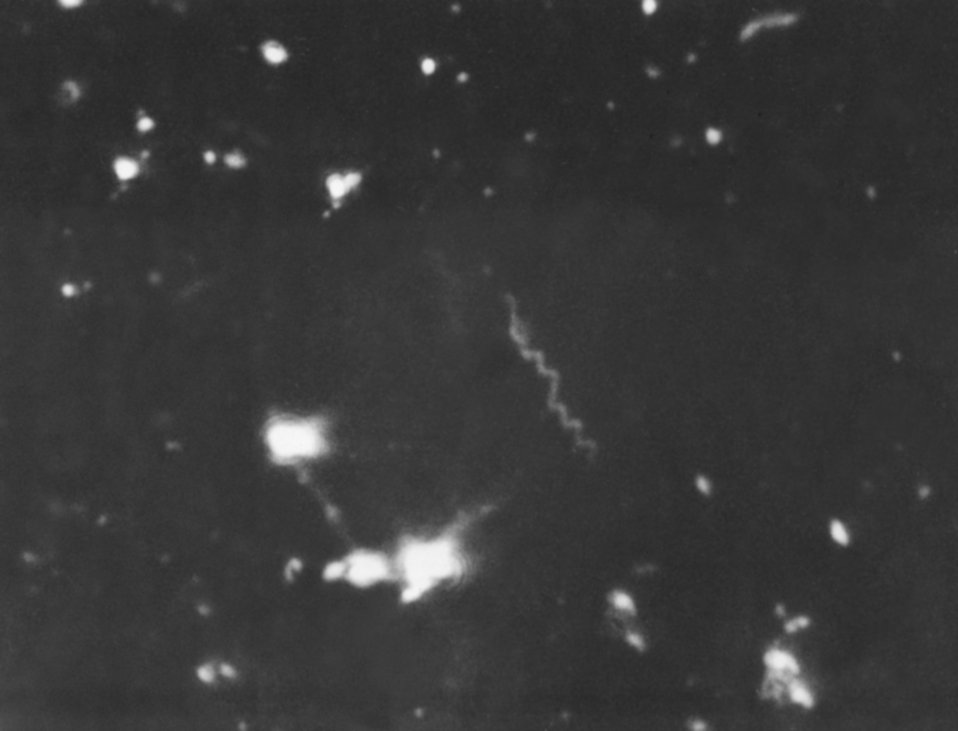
A dark field photomicrograph of a Treponema pallidum bacterium.